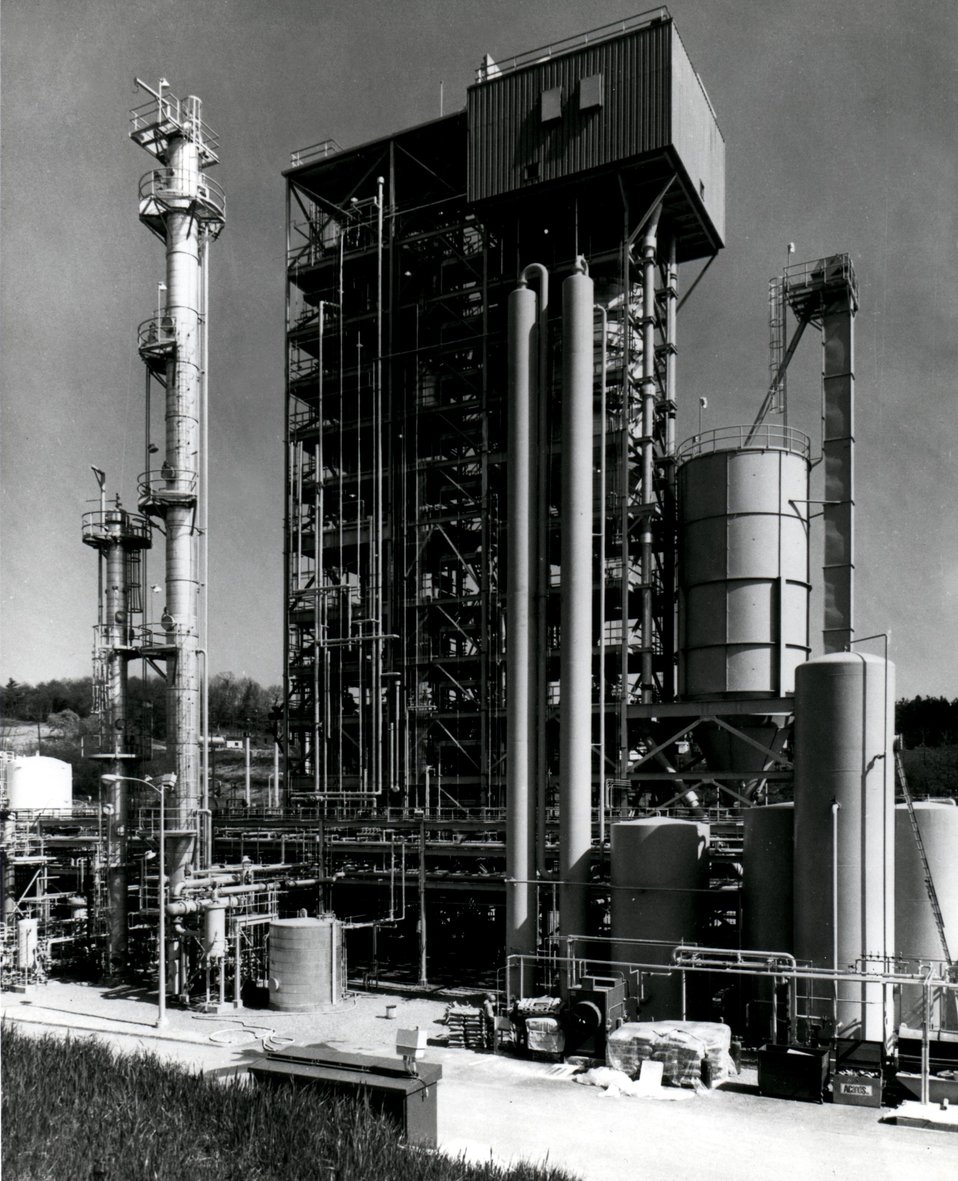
Pilot plant- the SYNTHANE Pilot Plant, located near PERC, can produce 72 tons of coal per day into 1.2 million cubic feet of gas. Circa 1976.